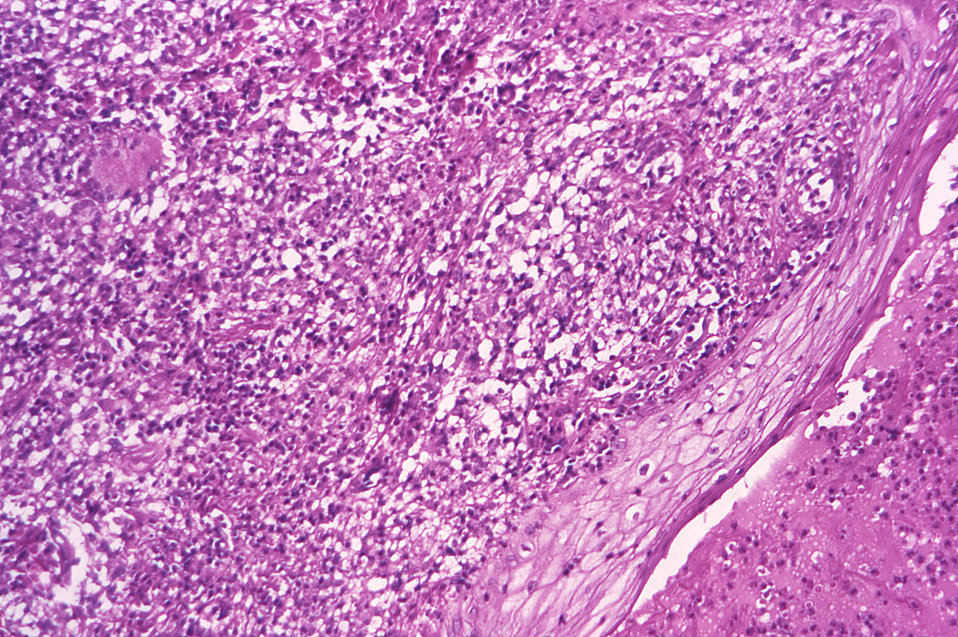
This light photomicrograph revealed some of the histopathologic cytoarchitectural characteristics seen in a mycobacterial skin infection.